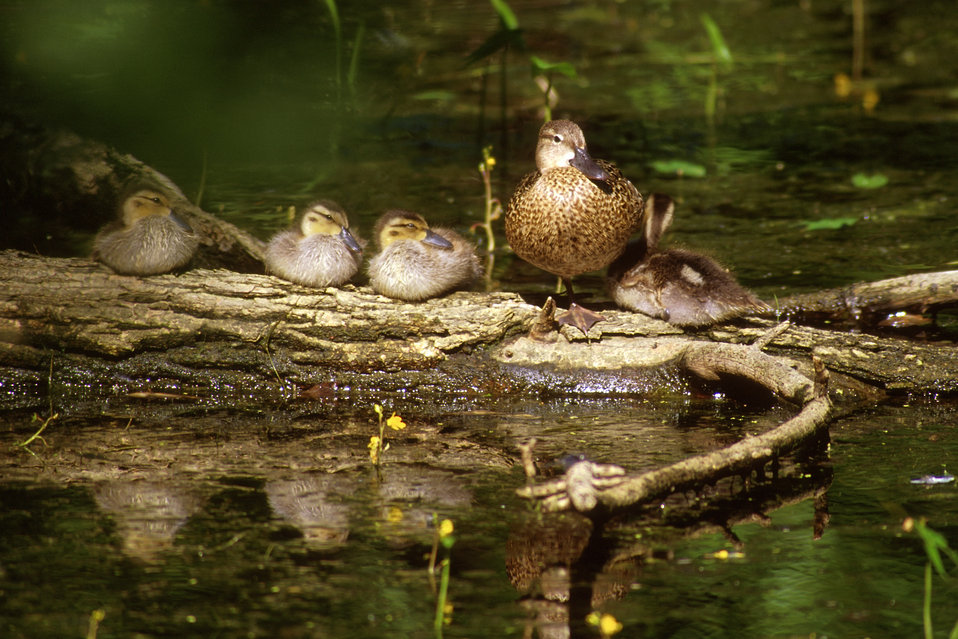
Blue-Winged Teal Brood

A beautiful view of a female Blue-Winged Teal and her brood at the J.Clarke Salyer National Wildlife Refuge located in north-central North Dakota